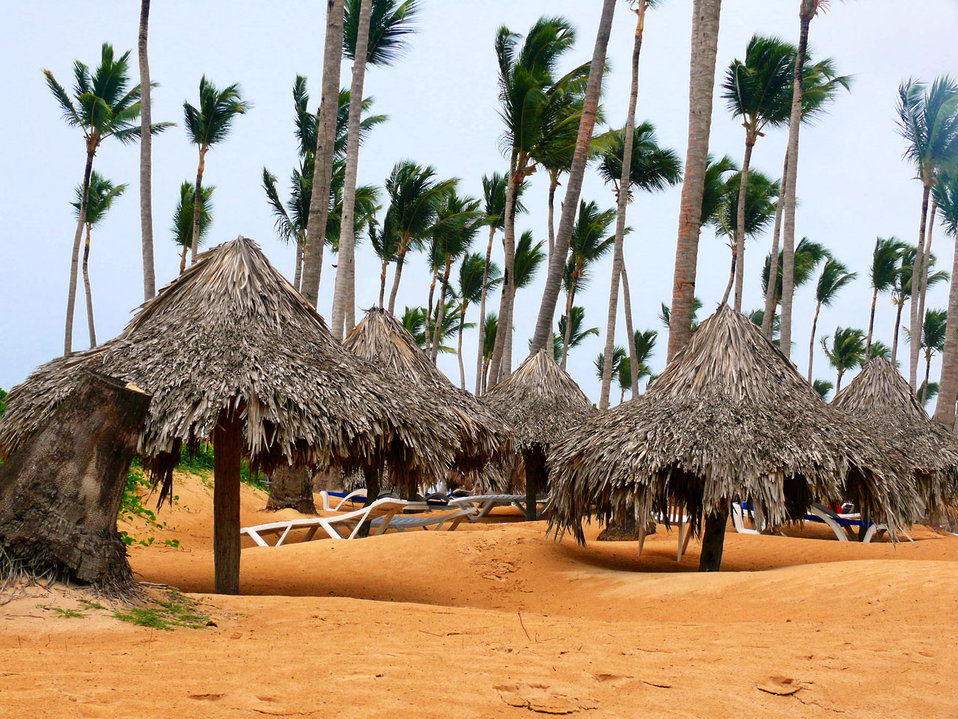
Beach in uvero alto.